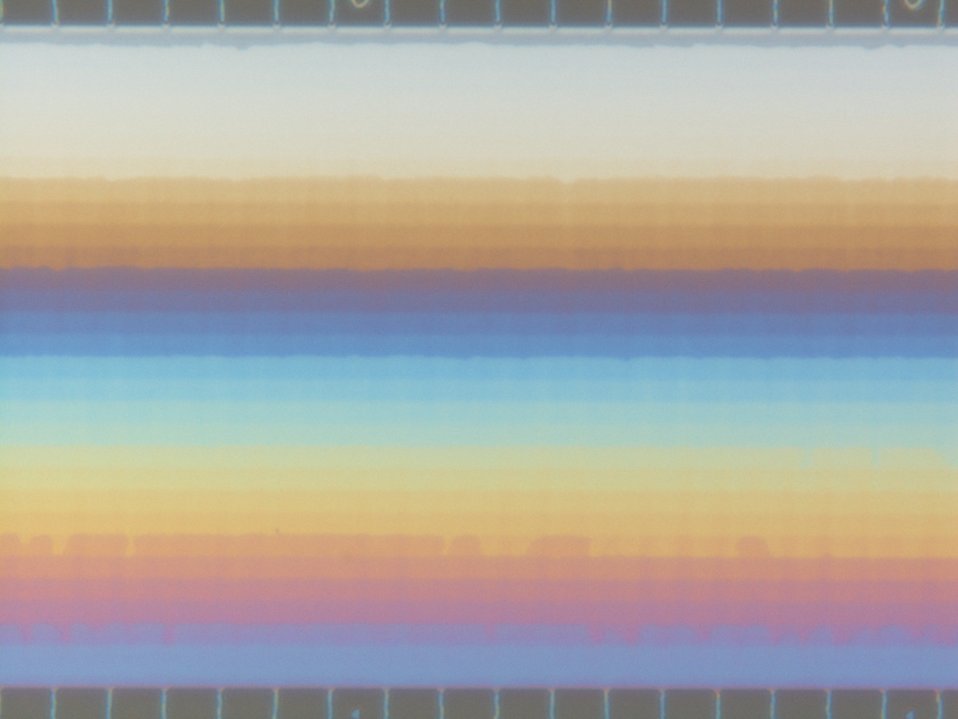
Nanofluidic Device

Overhead view of the NIST-Cornell 3-D nanofluidic device showing the different depth levels within the chamber as horizontal bands. The deepest, at the bottom, measures about 620 nanometers (slightly smaller than an average bacterium), while the shallowest, at the top, is about 60 nanometers (1,000 times smaller than the width of a human hair). The colors of the bands result from different mixing of white light components (interference) at each depth.

Also see www.nist.gov/pml/semiconductor/nanofluidics 033109.cfm.